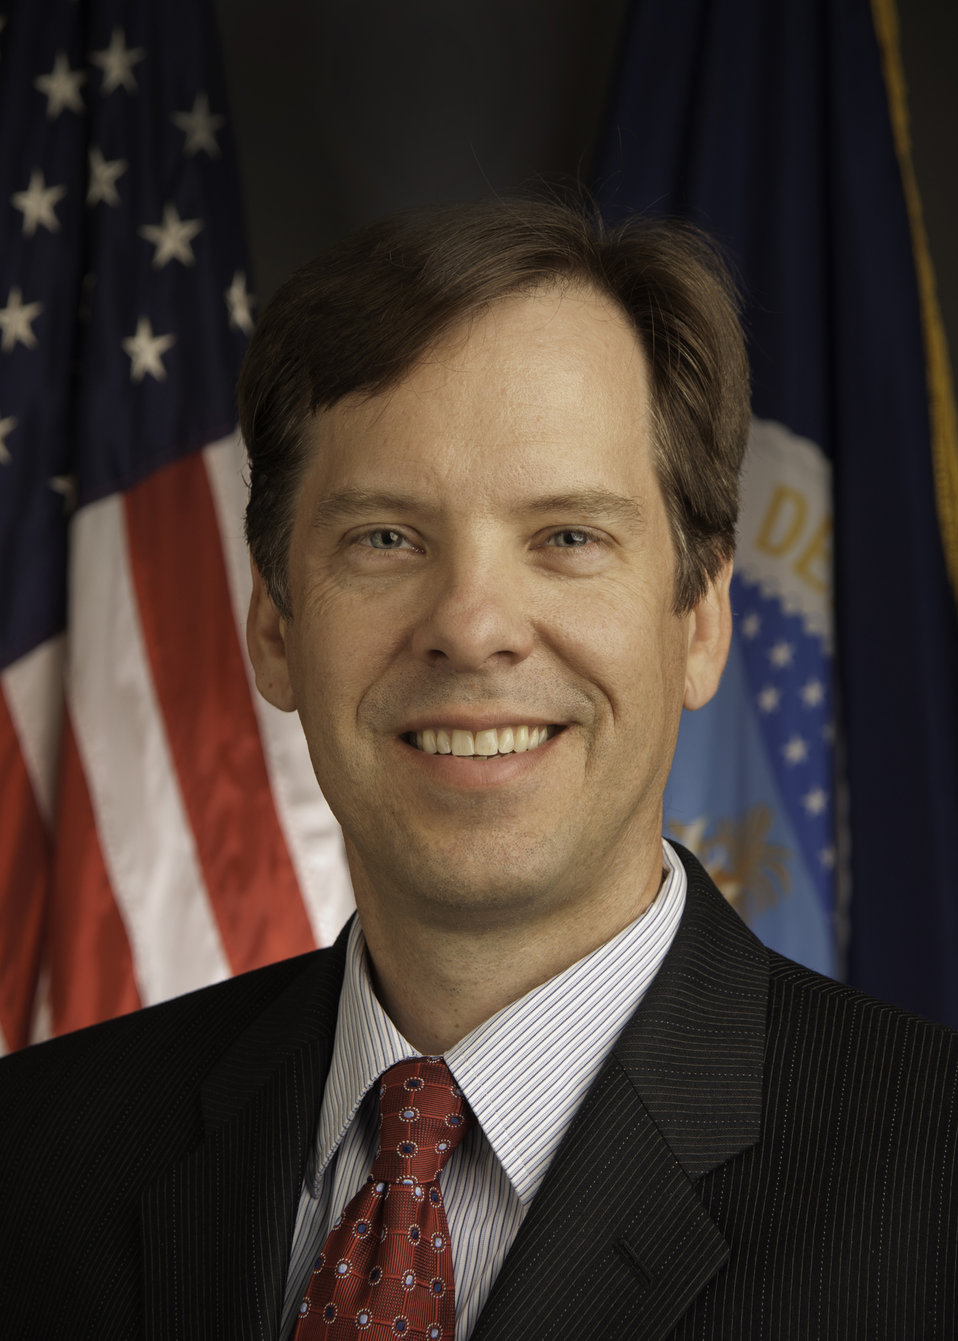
20120710-OCE-RBN-7707 Deputy Chief Economist Robert Johansson

Portrait USDA, Deputy Chief Economist Robert Johansson.